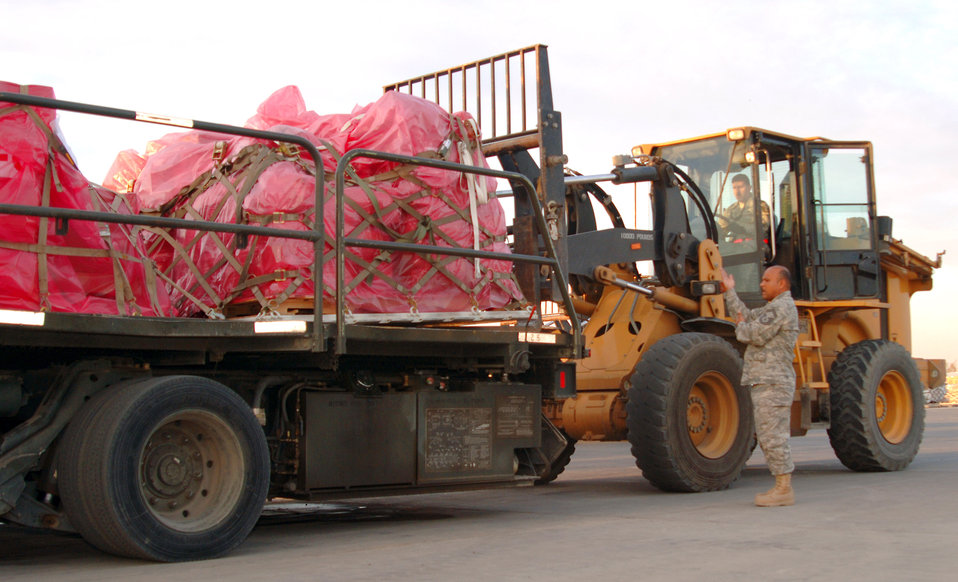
Aerial porters keep convoys off the road

Senior Master Sgt. Richard Garcia helps Tech. Sgt. Modesto Guevara line up his forklift to pick up cargo at Balad Air Base, Iraq. Both sergeants, aerial port flight ramp service technicians with the 332nd Expeditionary Logistics Readiness Squadron, are reservists deployed from the 26th Aerial Port Squadron at Lackland Air Force Base, Texas.